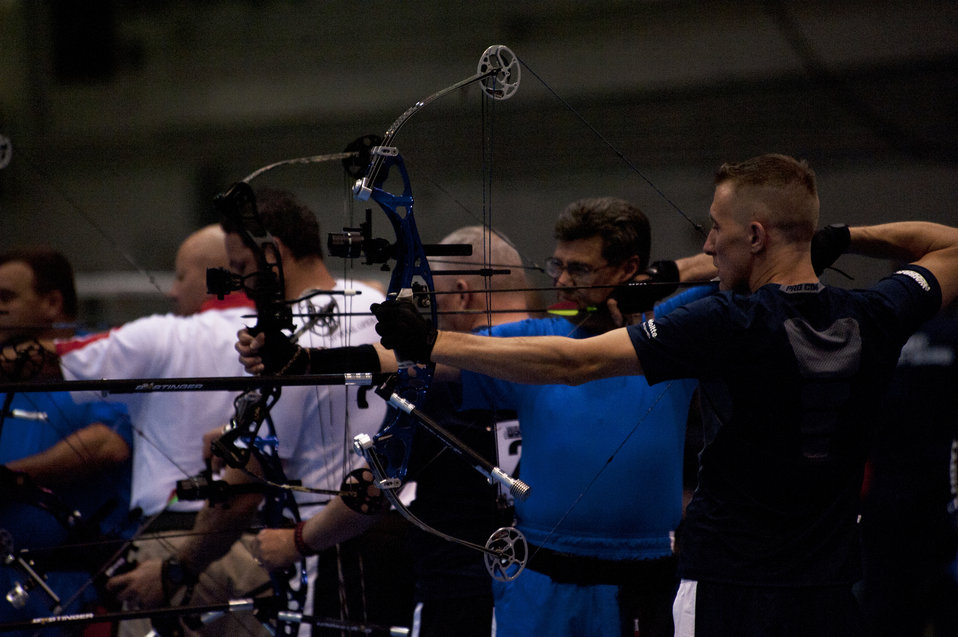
Warrior Games

Noel Sepulveda, second from left, and other athletes aim their bows at targets during the archery competition of Warrior Games 2012 at the U.S. Air Force Academy in Colorado Springs, Colo., May 2, 2012. Sepulveda is with the Air Force team.